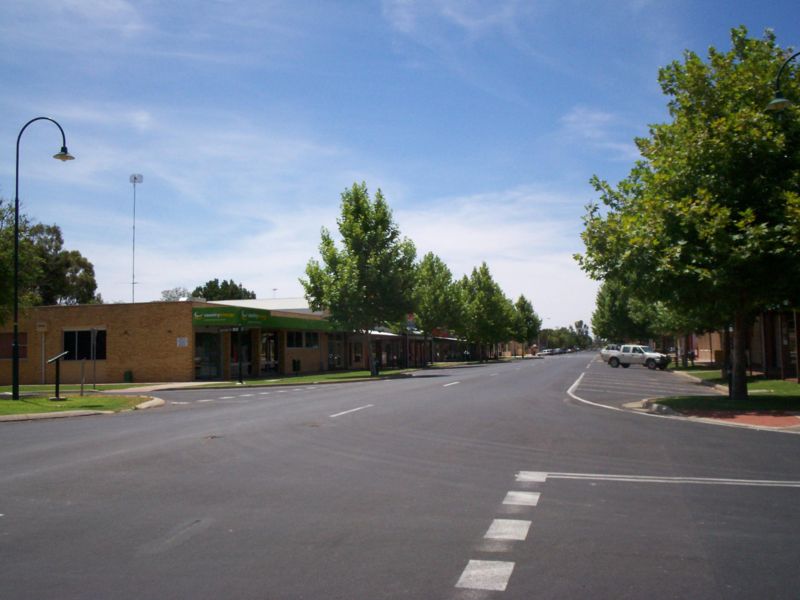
Français : Grand rue de Wentworth ,Nouvelle Galles du Sud, Australie Main street of Wentworth, New South Wales